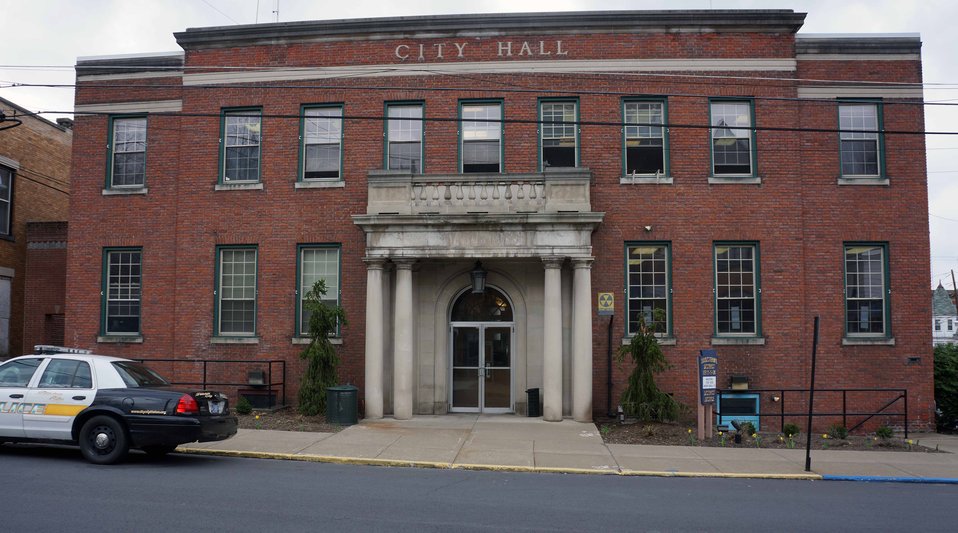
Pittston City Hall

Renovations will begin soon on the 40-year-old Pittston City Hall in Pittston, PA to modernize the exterior facade and upgrade the building to make it handicap accessible by adding an elevator.